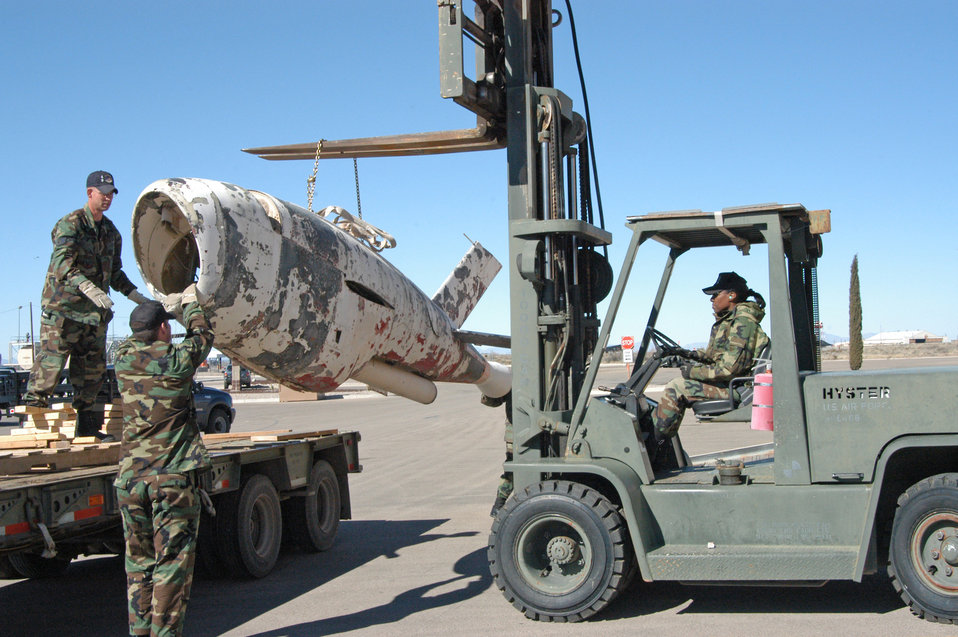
Drone returns to Holloman

HOLLOMAN AIR FORCE BASE, N.M. -- (From left) Staff Sgt. Marc Long, Tech. Sgt. Nolverto Nieto and Senior Airman Tonia Rybarczyk remove a Q-2 Firebee drone from a flatbed trailer Jan. 28. The drone will be stored here until an aircraft can take it to the National Museum of the U.S. Air Force at Wright-Patterson Air Force Base, Ohio, where it will be restored and displayed.